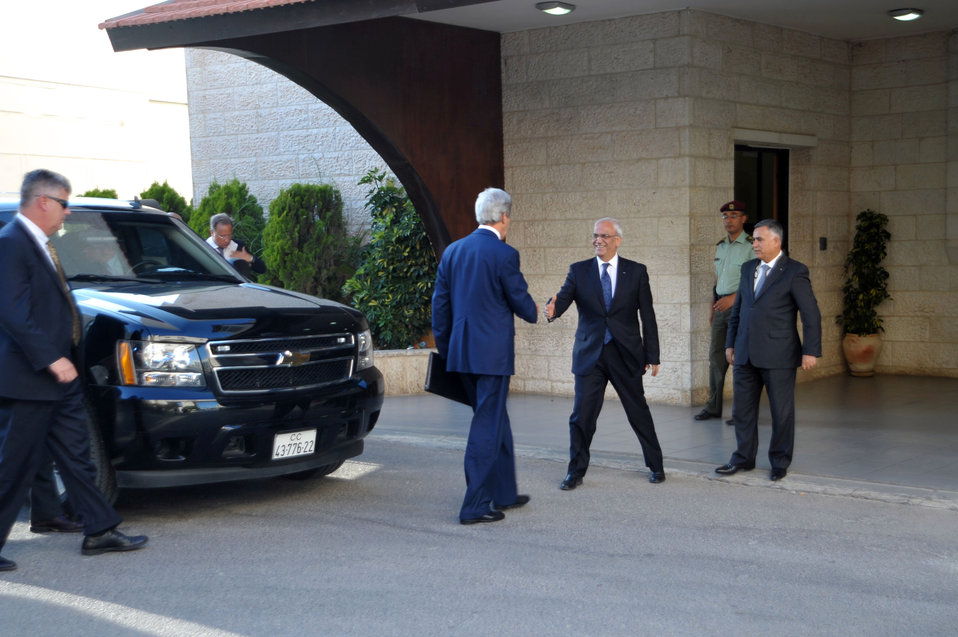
Secretary Kerry Is Greeted By Palestinian Authority Negotiator Erekat

U.S. Secretary of State John Kerry is greeted by Palestinian Authority negotiator Saeb Erekat as he arrives in the Authority's compound in Ramallah, West Bank, to meet with Palestinian Authority President Mahmoud Abbas on July 19, 2013.